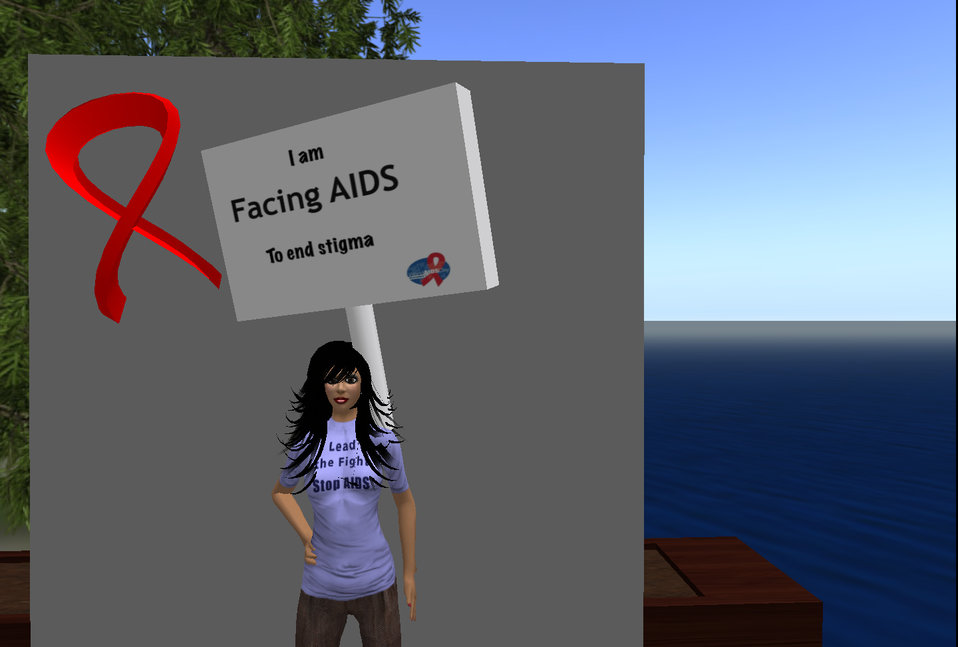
Facing AIDS for World AIDS Day 2009 in Second Life

Michelle Samplin-Salgado (aka Ellehcim) Facing AIDS in Second Life for World AIDS Day 2009.